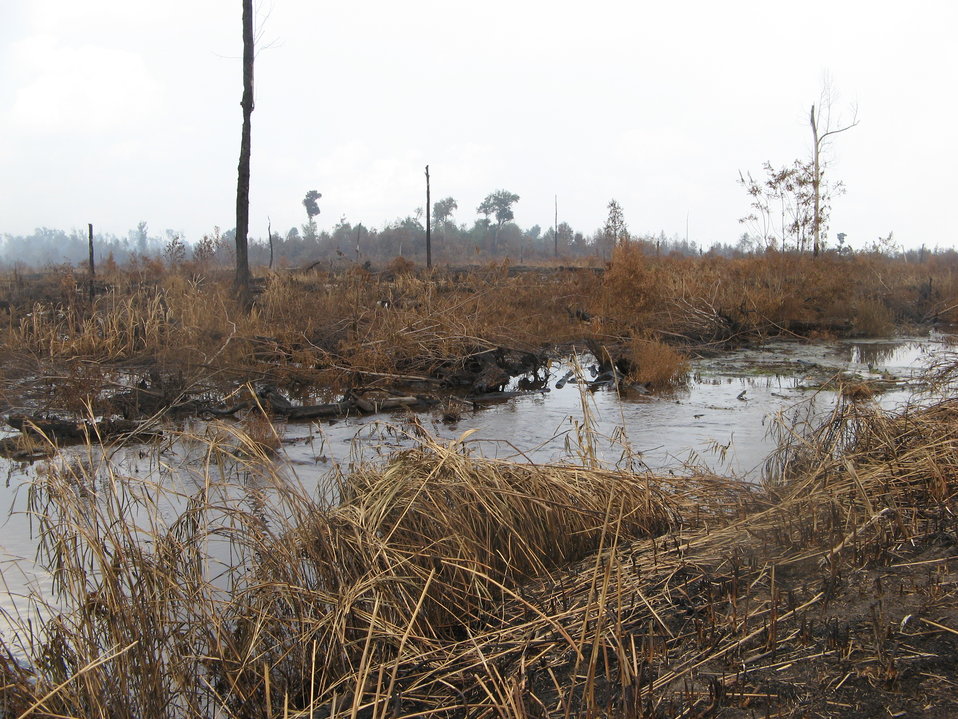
Flooding begins

Suffolk, VA, August 2011:This area immediately west of Lake Drummond was the first area to be flooded by water pumped from the lake during the Lateral West Fire on Great Dismal Swamp National Wildlife Refuge.